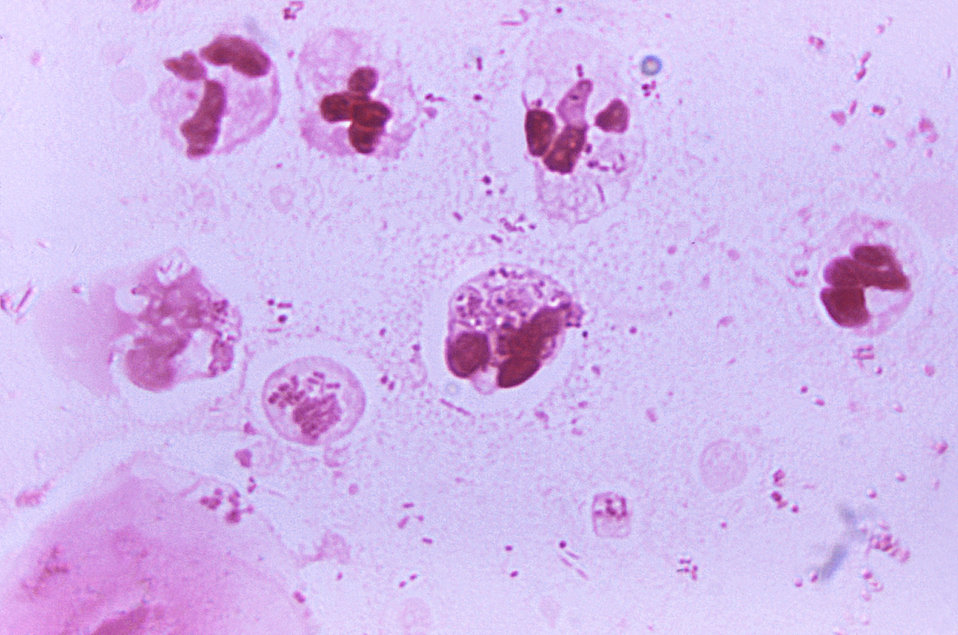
A photomicrograph of urethral exudates from a patient with 'nonspecific' urethritis; Magnified 1125X.